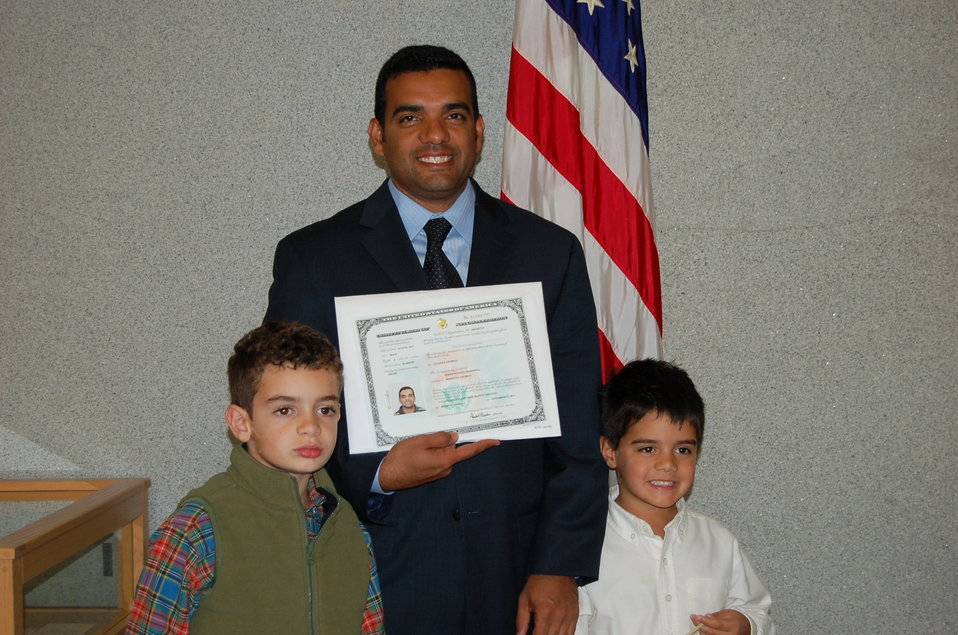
New Citizens